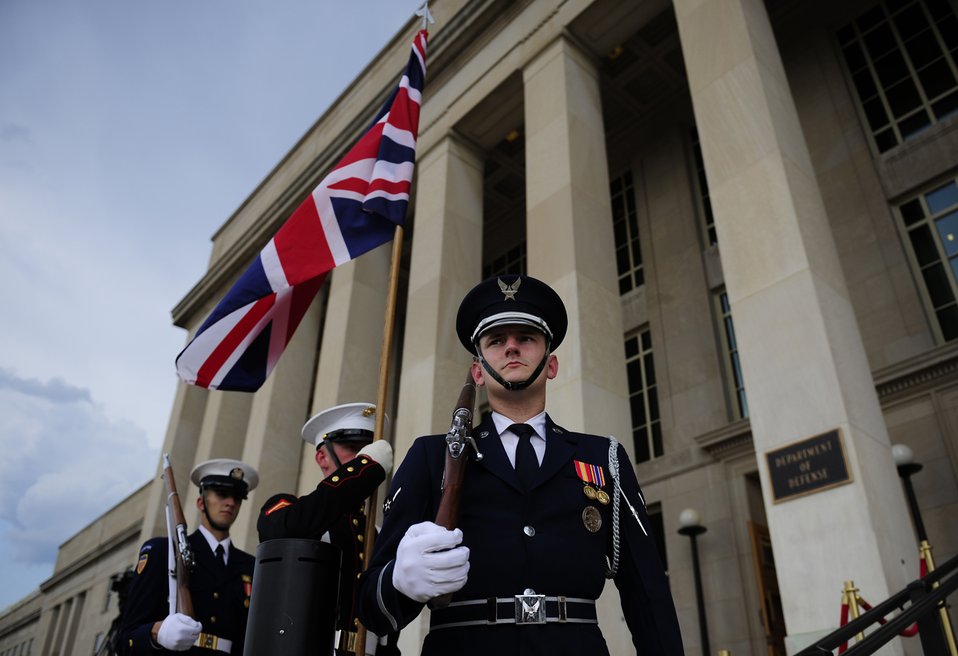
Joint Honor

Members of a joint honor guard walk Aug. 1, 2011 to prepare for the arrival of British Secretary of State for Defense Liam Fox at the Pentagon. Fox met with Secretary of Defense Leon Panetta to discuss security issues.